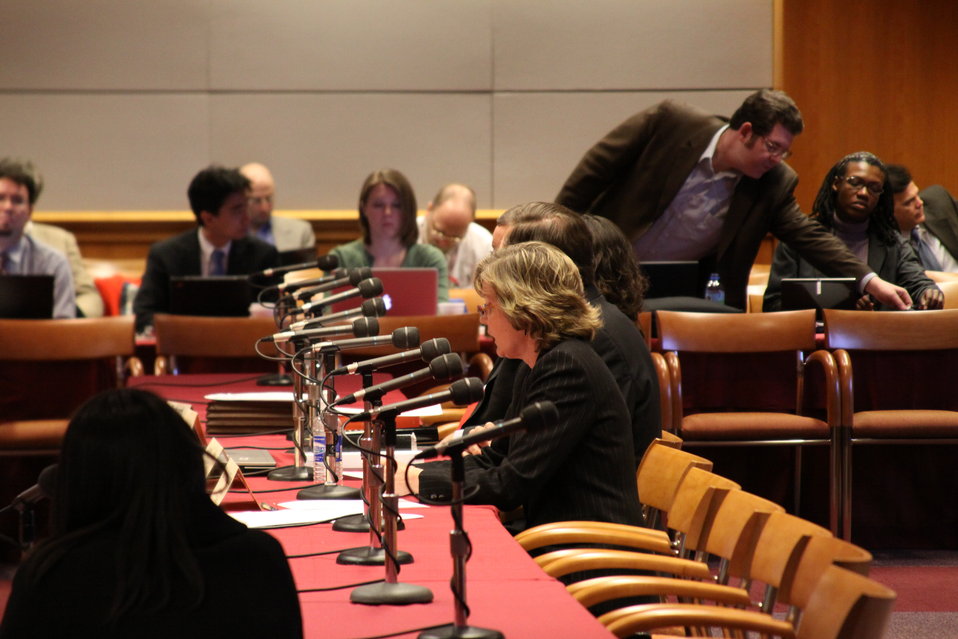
Open Commission Meeting - 2/18/2010

The Federal Communications Commission will hold an Open Meeting in Washington, DC. on February 18, 2010, which will include the following items:

E-Rate: An Order and Notice of Proposed Rulemaking to enable schools that receive funding from the E-Rate program to allow members of the general public to use the schools' Internet access during non-operating hours at no additional cost to the Universal Service Fund. This order and notice do not permit or require any changes to E-Rate applications due on February 11, 2010; Ex Parte Reform: A Notice of Proposed Rulemaking to improve the transparency and effectiveness of the FCC's decision-making process by reforming the ex parte rules; Procedural Reform: A Notice of Proposed Rulemaking to enhance the efficiency, openness, and transparency of the Commission's proceedings by improving and modernizing certain organizational and procedural rules; National Broadband Plan Status Report: Commission staff will report on the status of the National Broadband Plan, providing a framework for the national purposes portion of the Plan.